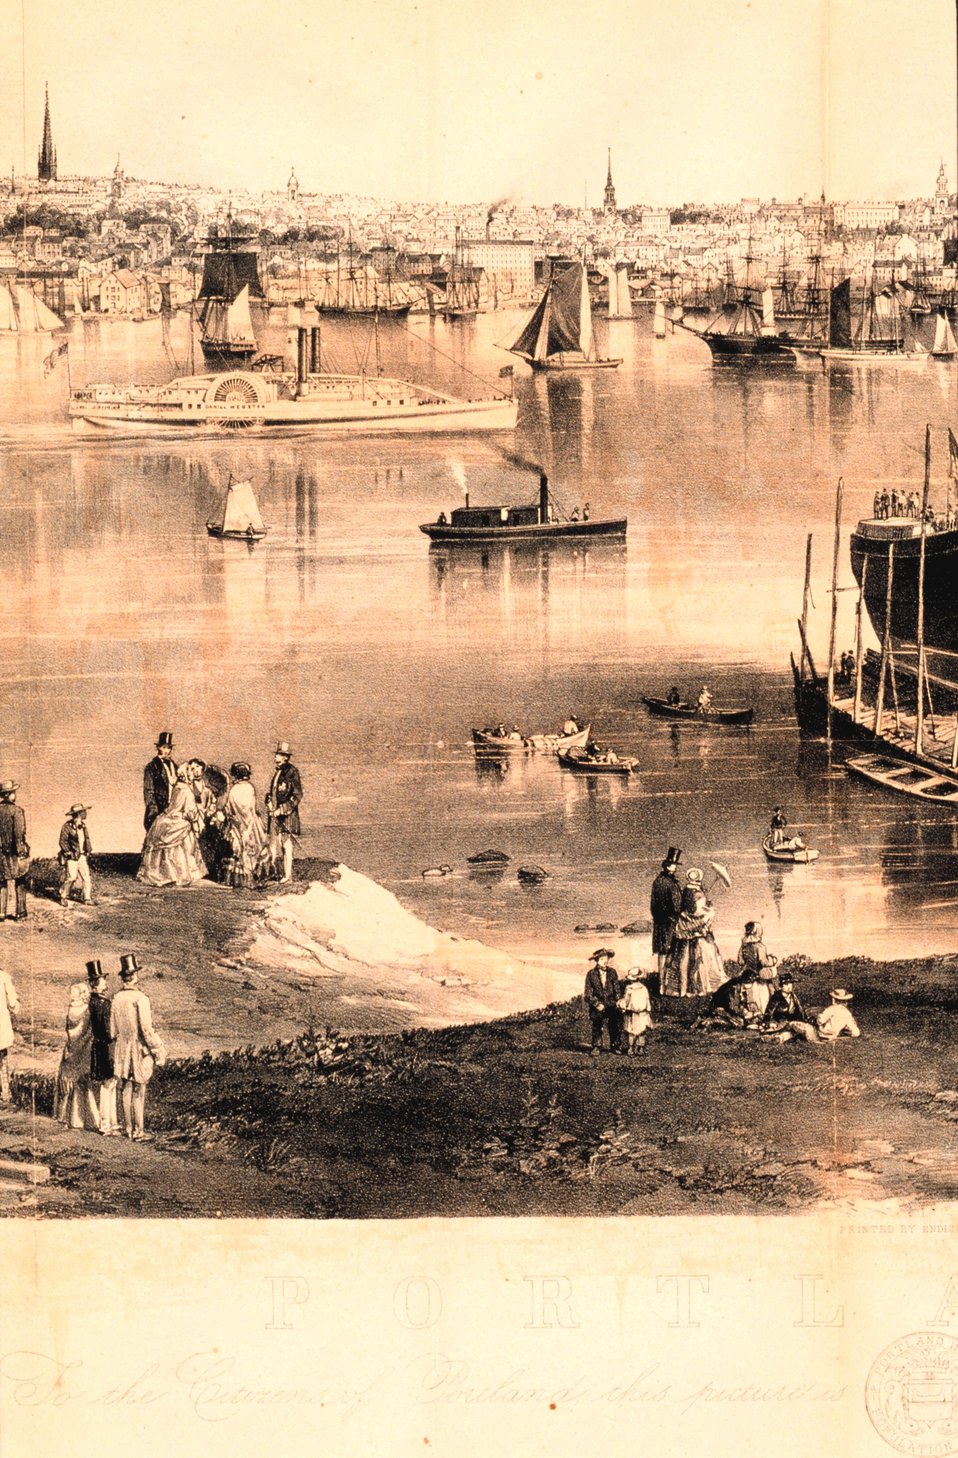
Center -left quarter detail of engraving of Portland Harbor